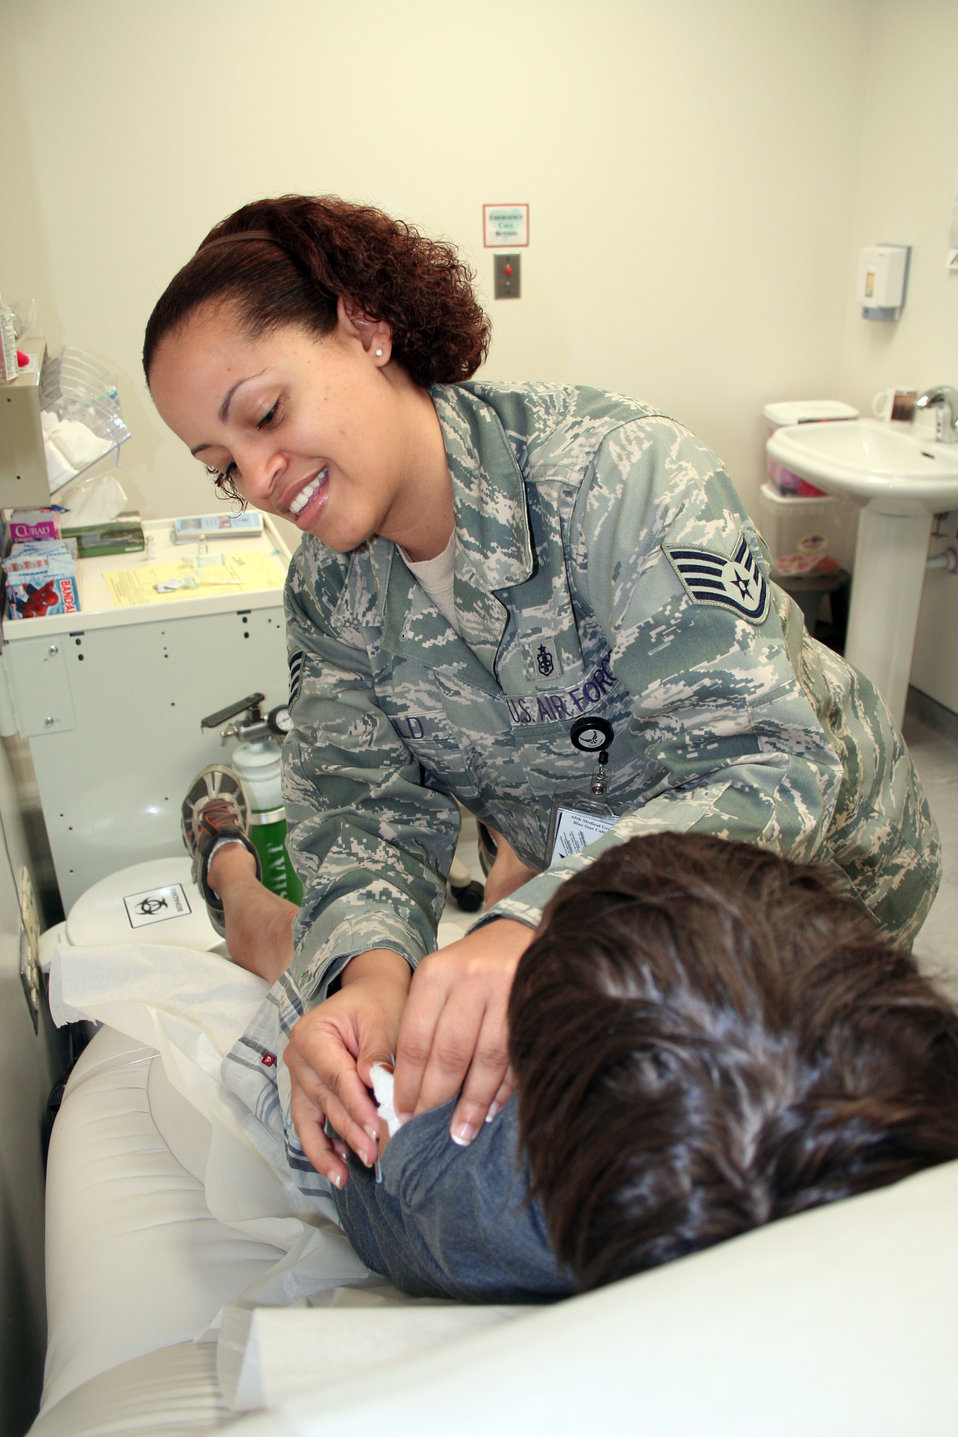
Lajes Field clinic hosts school, sports physical day

Staff Sgt. Dorothy Arnold places a band-aid on the arm Troy Ringlein after she administered a shot as part of his immunizations during the school and sports physical day held Aug. 20 at the Lajes Field, the Azores. Sergeant Arnold is assigned to the 65th Medical Operation Support Squadron, and Troy is the son of Maj. Thomas Ringlein, 65th Logistics Readiness Squadron director of operations.